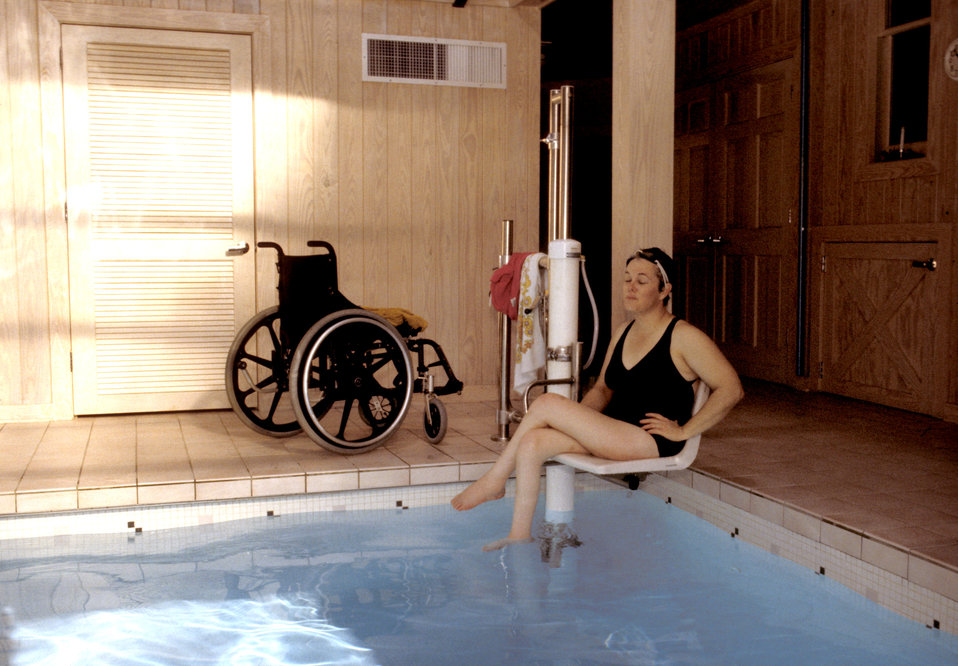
In this 1993 image (and see PHIL# 9085), a woman seated in her wheelchair was about to enter a publicly-accessible swimming pool by using a motorized lift. The lift, allowed her to be seated in a comfortable position, then would rotate so that she'd be extended out over the water, and slowly lowered at will. The inclusion of such a device broadened the scope of its demographic usability, thereby, extending the accessibility to this facility to a wider range of participants. Designing recreation sites with the mobility-challenged in mind, makes for an overall more user-friendly environment for all, and is quite often, made even more efficient from a utilitarian standpoint.